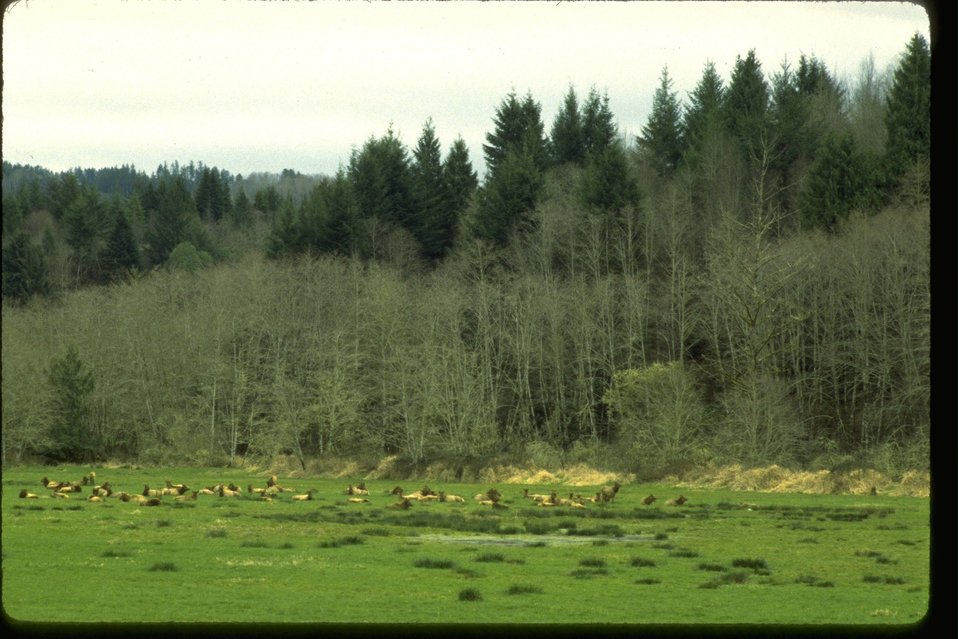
Elk at Dean Creek.